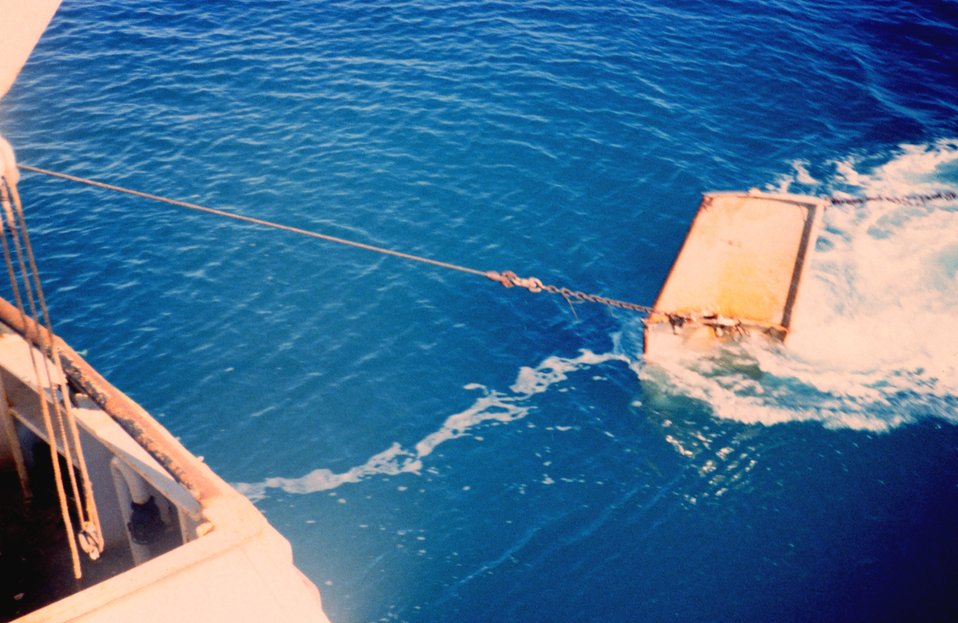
Photo # 6 - 'Shooting the doors'. The 'doors' help pull the net down and also spread open the mouth of the net.